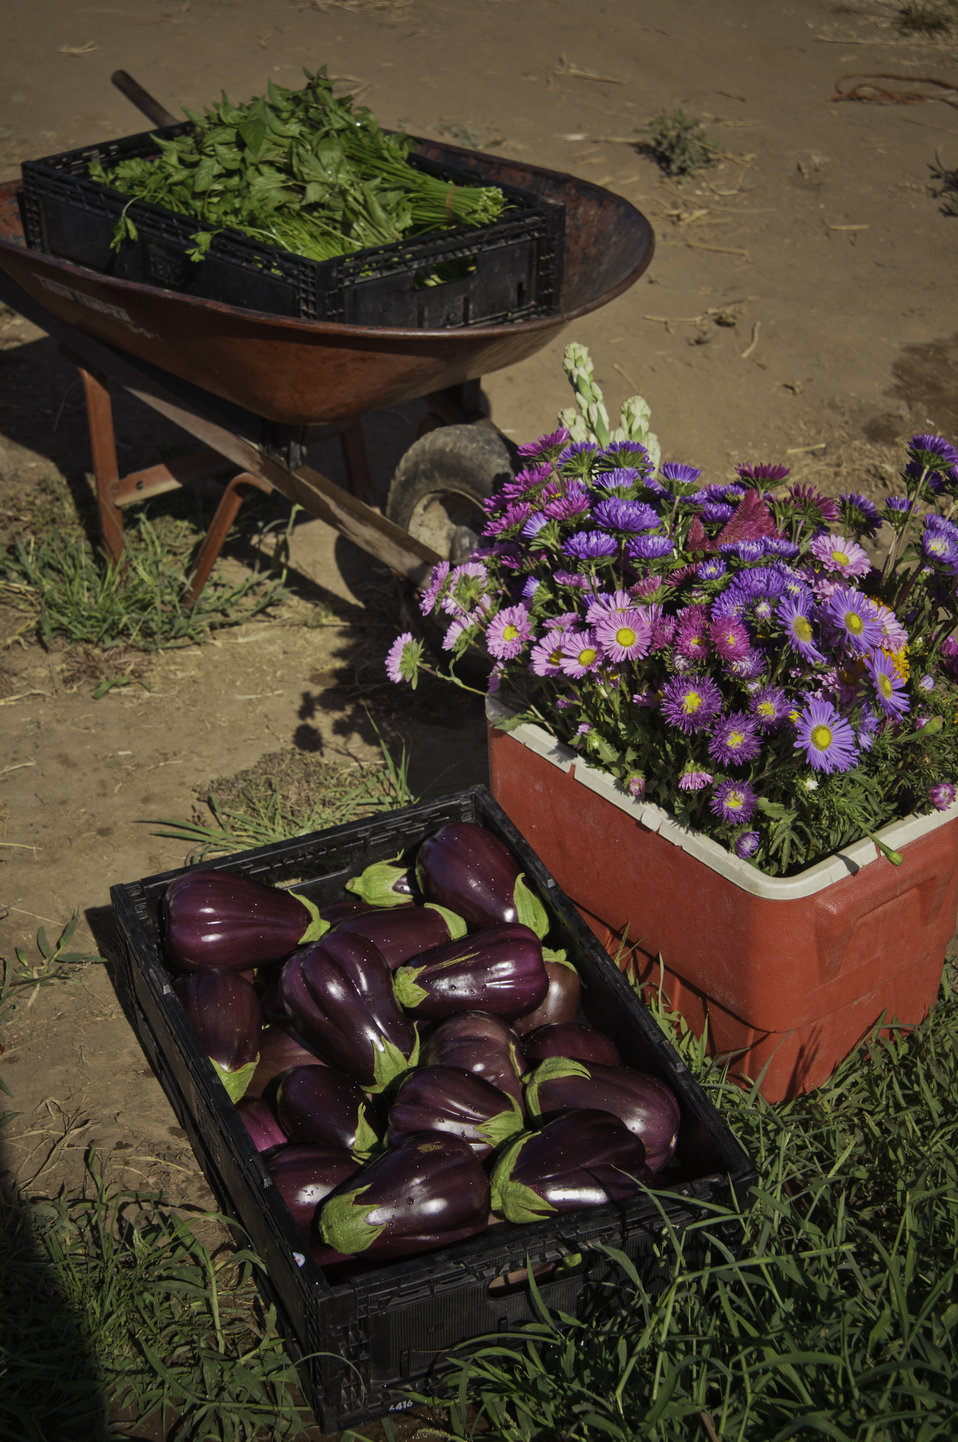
Basil, flowers and eggplant harvested in the morning on May's Flower's in Sanger, California for the farmers market in the afternoon on Thursday, August 29, 2013.